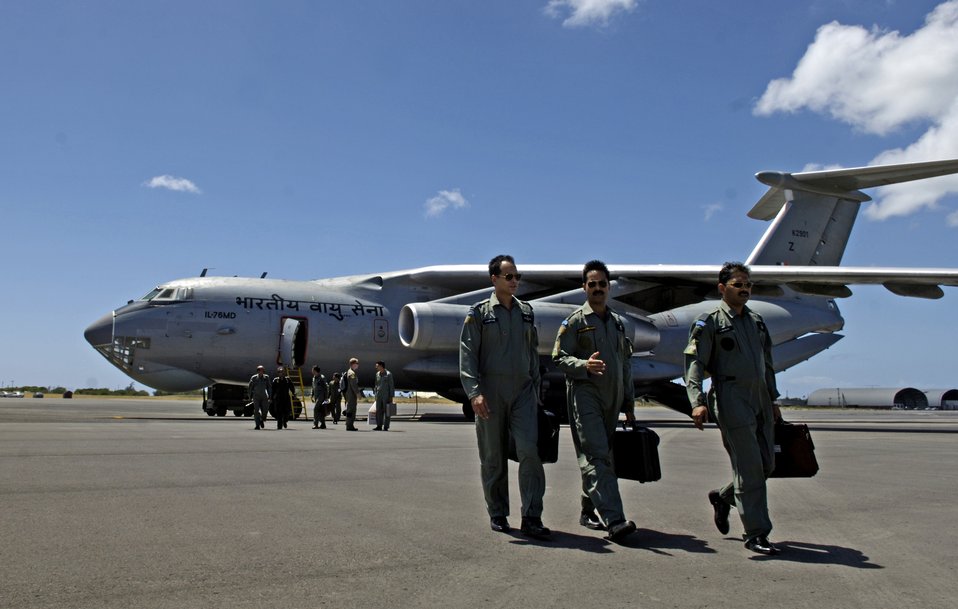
Airmen fly with Indian air force counterparts

Indian air force pilots walk away from their IL-76 medium cargo jet after landing at Hickam Air Force Base, Hawaii, Sept. 20. The Indian crew flew Airmen from the 15th Airlift Wing on a training mission to show the capabilities of their aircraft to their American counterparts.